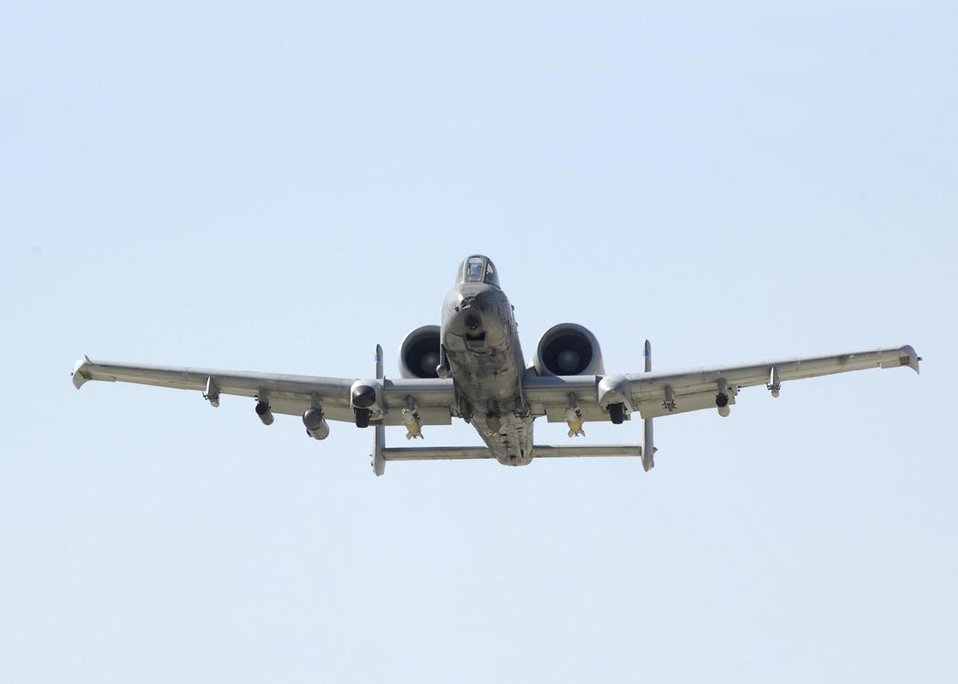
Airpower summary for Oct. 23, 2007

A-10 Thunderbolt IIs, like this one taking off from Bagram Air Base, Afghanistan, provide close-air-support for coalition troops engaging enemy forces in Afghanistan and Iraq.